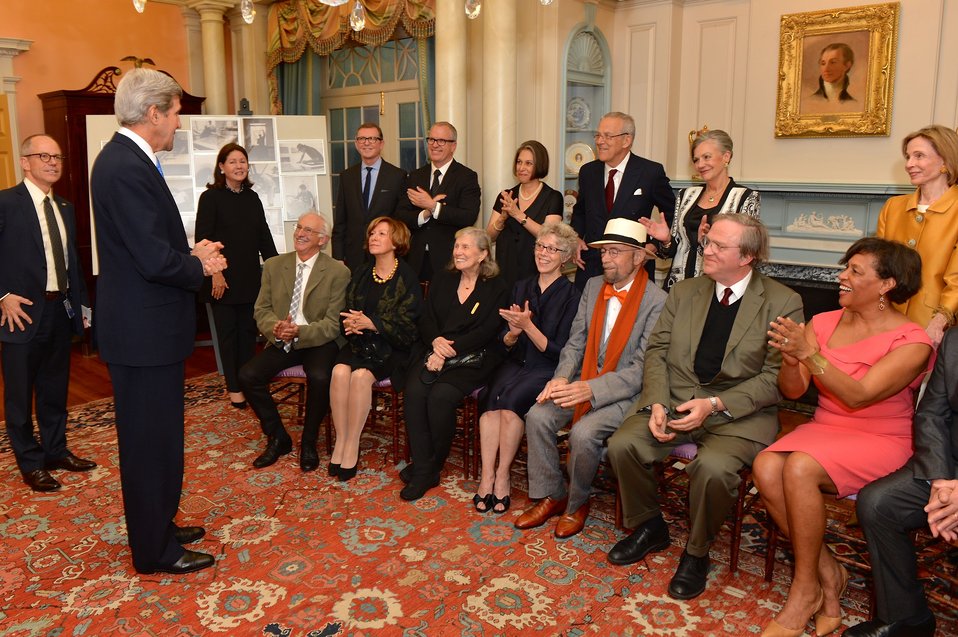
Secretary Kerry Speaks With Foundation for Art and Preservation in Embassies Members

U.S. Secretary of State John Kerry speaks with members of the Foundation for Art and Preservation in Embassies (FAPE), at the U.S. Department of State in Washington, D.C., on May 7, 2014.